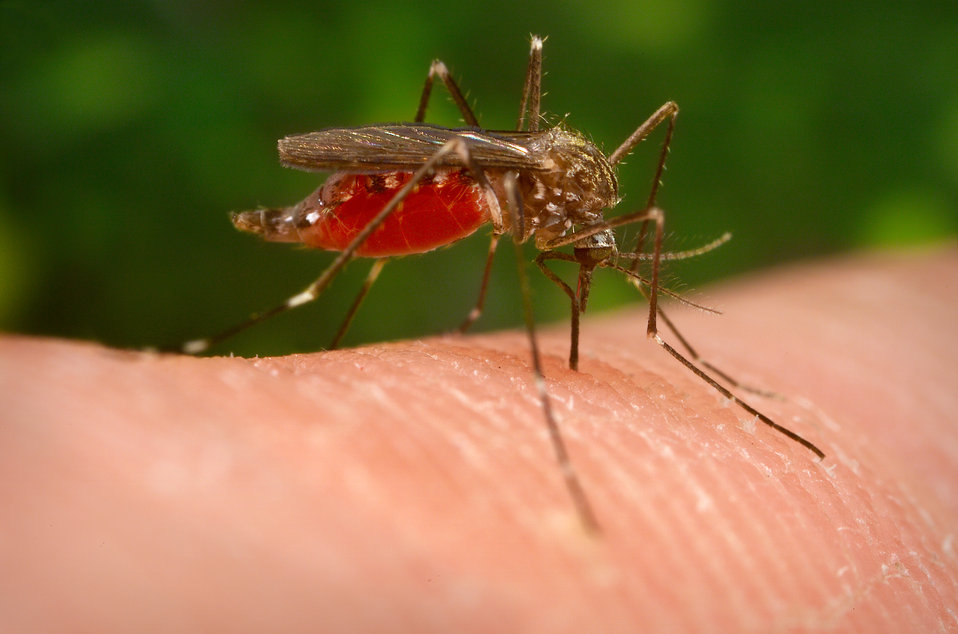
This mosquito, known as Aedes japonicus (also called Ochlerotatus japonicus), is a specimen of the Notre Dame colony. This Asian mosquito was first collected in the United States in New York and New Jersey in 1998.